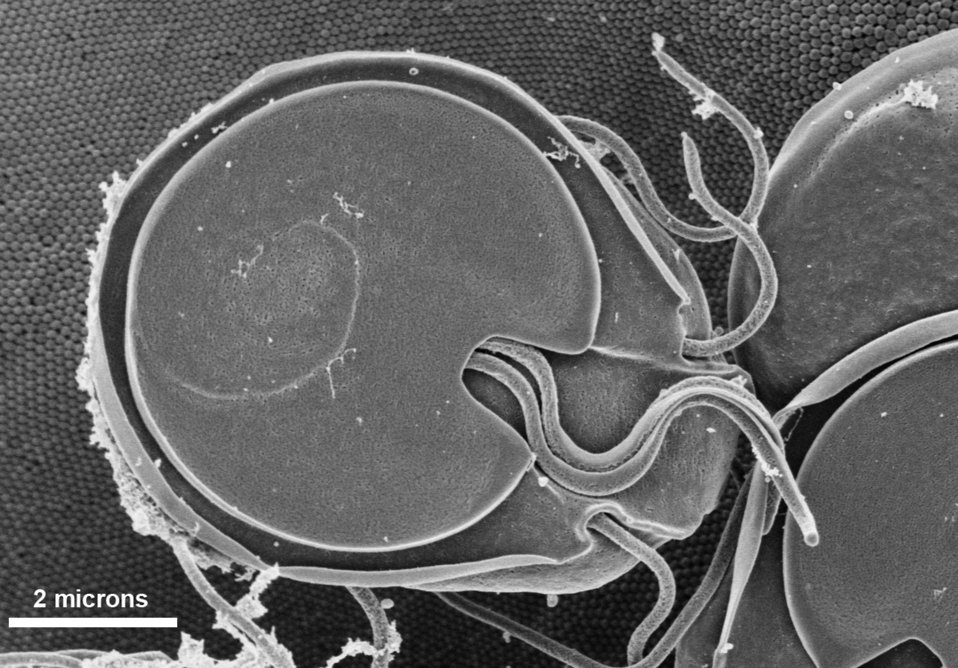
This scanning electron micrograph (SEM) revealed the ventral surface of a Giardia muris trophozoite that had settled atop the mucosal surface of a rat's intestine. Note the microvilli, which can be seen in the background, as tiny rounded structures that are approximately 0.15 microns in diameter. These microvilli cover the surface of each intestinal epithelial cell. The Giardia's ventral adhesive disk resembles a suction cup, where overlapping microtubules in the cytoplasm form a number-6-shaped figure. The edge of the suction cup, called the ventrolateral flange, partially encircles the adhesive disk and is absent posteriorly where a ventral pair of flagella emerges from above, dorsal to the disk. Giardia muris has four pairs of flagella that are responsible for the organism's motility. The adhesive disk facilitates adherence to the intestinal surface.